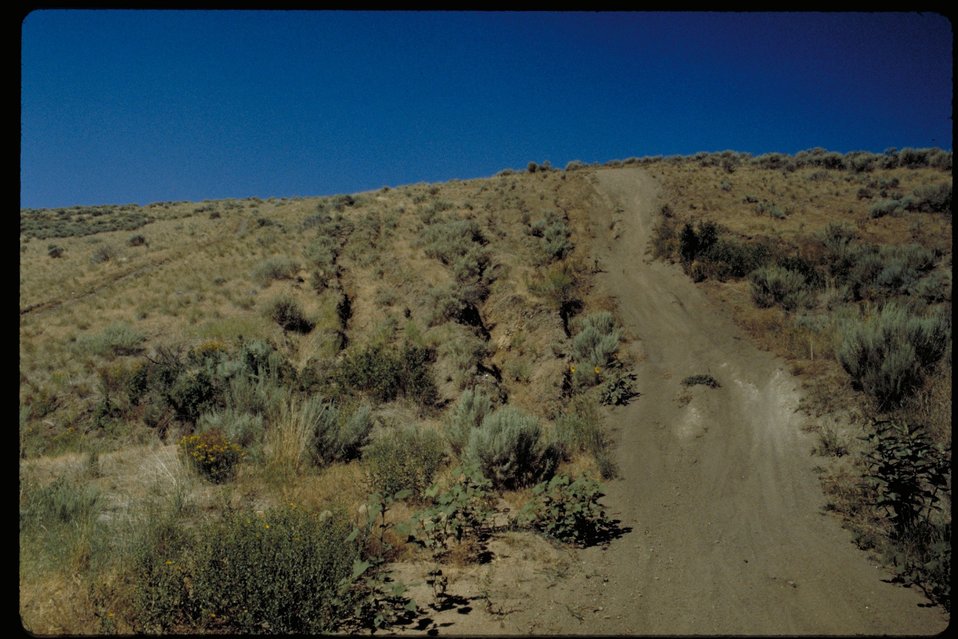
Crane Gulch Connector OHV Trail Off Highway Vehicles Boise Front Four Rivers Field Office LSRD Lower Snake River District